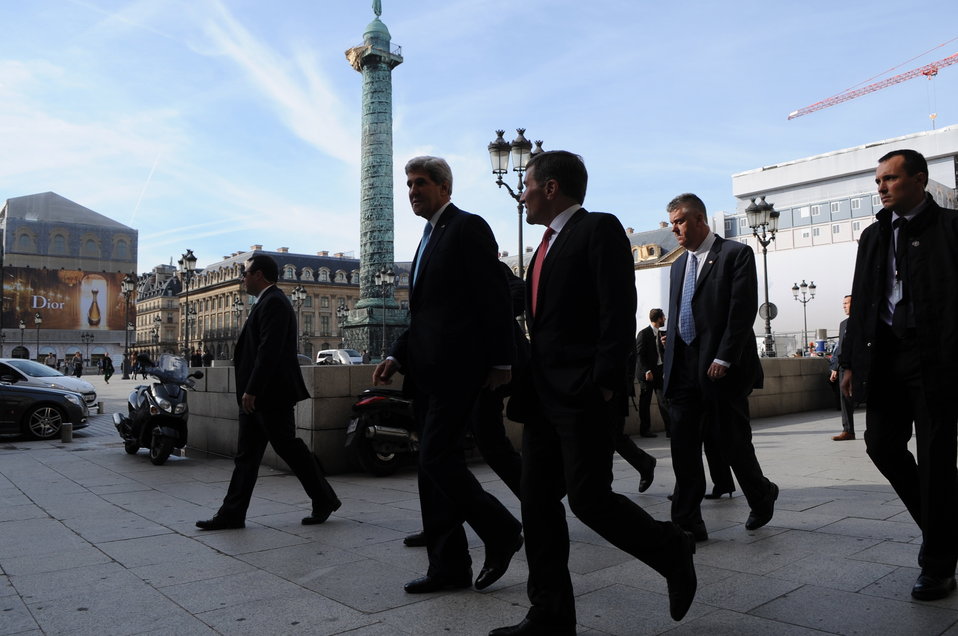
Secretary Kerry and Ambassador Rivkin Walk Through Place Vendome

U.S. Secretary of State John Kerry, accompanied by U.S. Ambassador to France Charles Rivkin, takes a walk through Place Vendome in Paris, France before meetings with Arab leaders about the future of Syria on October 21, 2013.